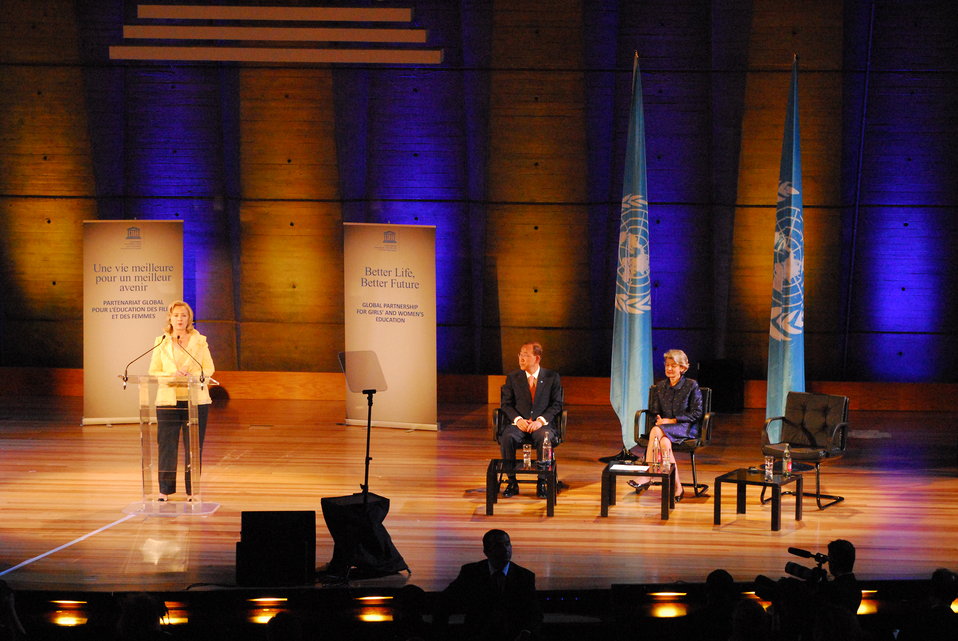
Secretary Clinton Delivers Remarks

U.S. Secretary of State Hillary Rodham Clinton delivers remarks at the launch of UNESCO’s new Global Partnership for Girls’ and Women’s Education, at UNESCO in Paris, France, on May 26, 2011.